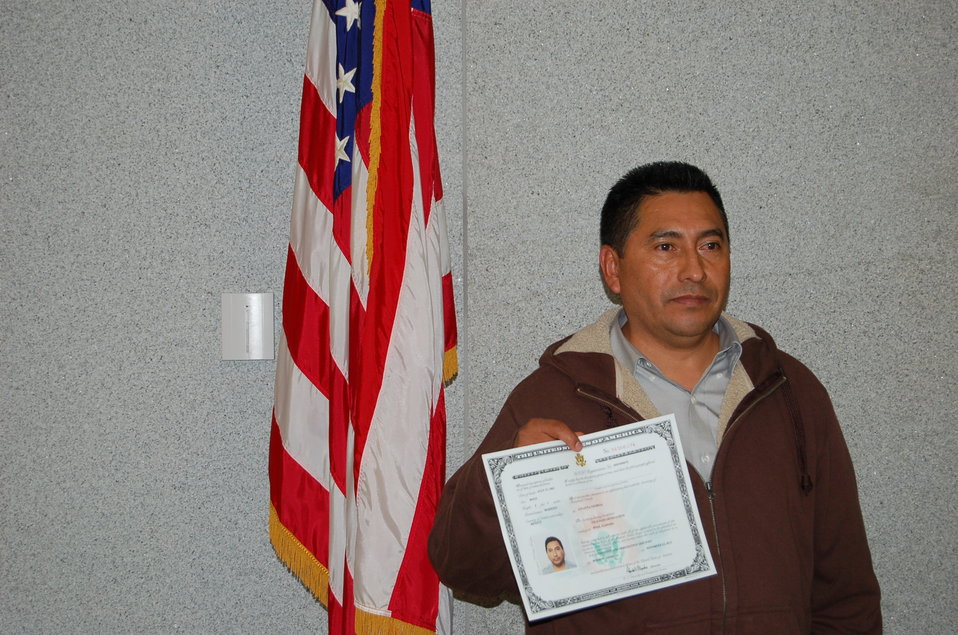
New Citizens